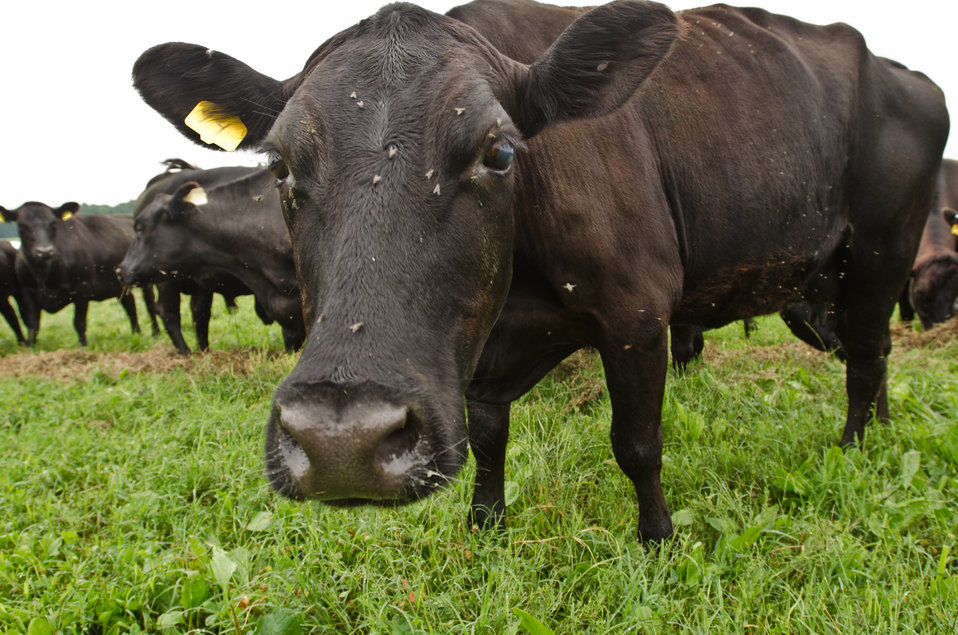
Black Angus cows and calves graze organic pastures, and for added nutrition and variety, they enjoy a daily feeding of sweet silage at Nick’s Organic Farm, owned by Nick Maravell, in Adamstown, MD on Friday, July 12, 2013. The white plastic wrapped bales of pasture grass and alfalfa have been fermenting for months to create sweet silage that stores well and can be used to feed cattle at varying amount all year long. The fermentation process sweetens the taste and increases the vitamin levels. The farm produces Black Angus beef, chicken, turkey, eggs, hay, soybeans, corn, alfalfa, orchard grass, rye; and other crops. The cattle are 100% grass-fed receiving certified organic pasture, certified organic hay (in winter), water and mineral salts mixed with sea kelp. The cattle are not fed hormones, antibiotics or animal products. Poultry feed from grain is ground from organic grain. The poultry also graze on organic pastures. The farm has conducted on-farm research with federal, state and non-profit agencies to refine organic practices. An organization such as the U.S. Department of Agriculture (USDA) Agricultural Research Service (ARS) center in Beltsville has been able to conduct research to improve organic crops and to breed and manage the cattle so that they have.